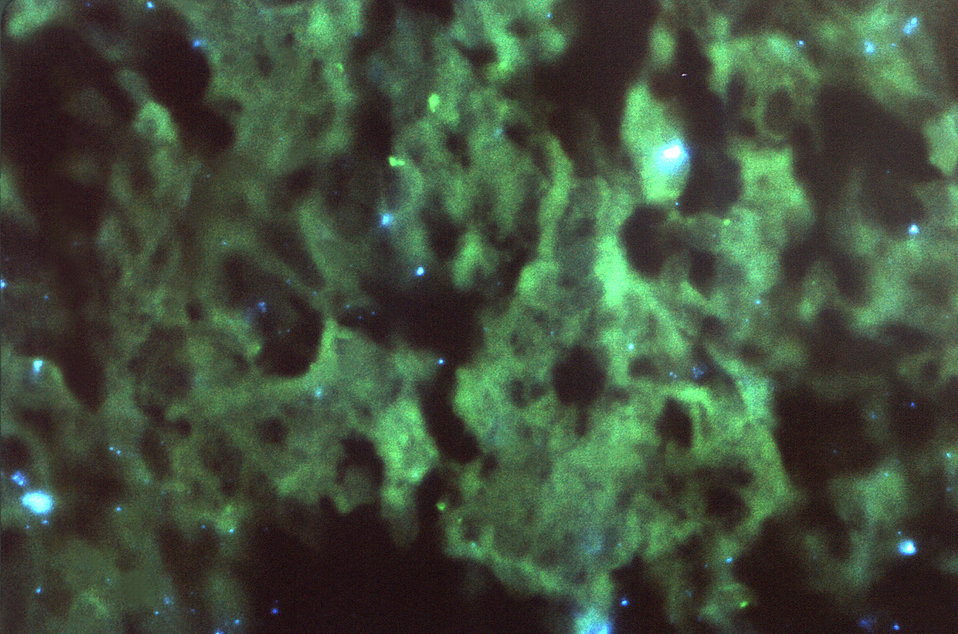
Magnified 562X, this photomicrograph, stained using the fluorescent antibody (FA) technique, revealed elements of a Zygomycetes infection within an unidentified tissue sample.